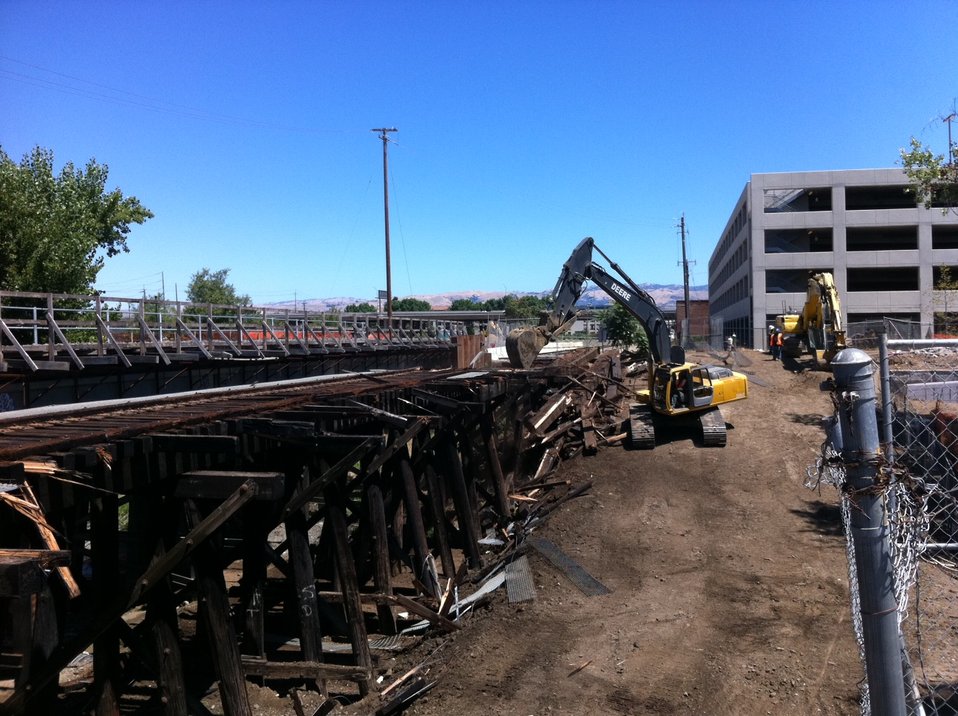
Old wooden trestle railroad bridge

The old wooden trestle railroad bridge in San Jose, Calif., seen Aug. 15, 2011, was lower and had narrow pilings that blocked floodwater and often caused the Guadalupe River to spill its banks. (U.S. Army courtesy photo/RELEASED)